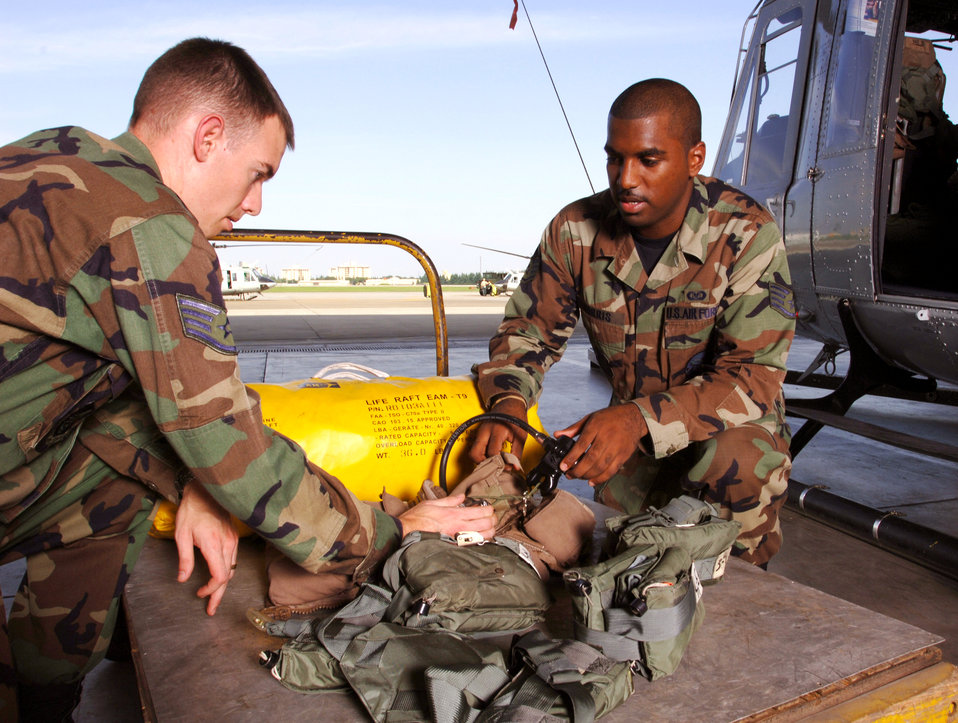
Pacific life support

YOKOTA AIR BASE, Japan -- Staff Sgts. Brian Higgins (left) and Raymond Norris load survival equipment inside a UH-1N Huey helicopter before an overwater mission. The two aircrew life-support technicians, both assigned to the 459th Airlift Squadron here, provide life rafts, life preservers, survival vests, survival kits and emergency breathing system equipment for aircrews.